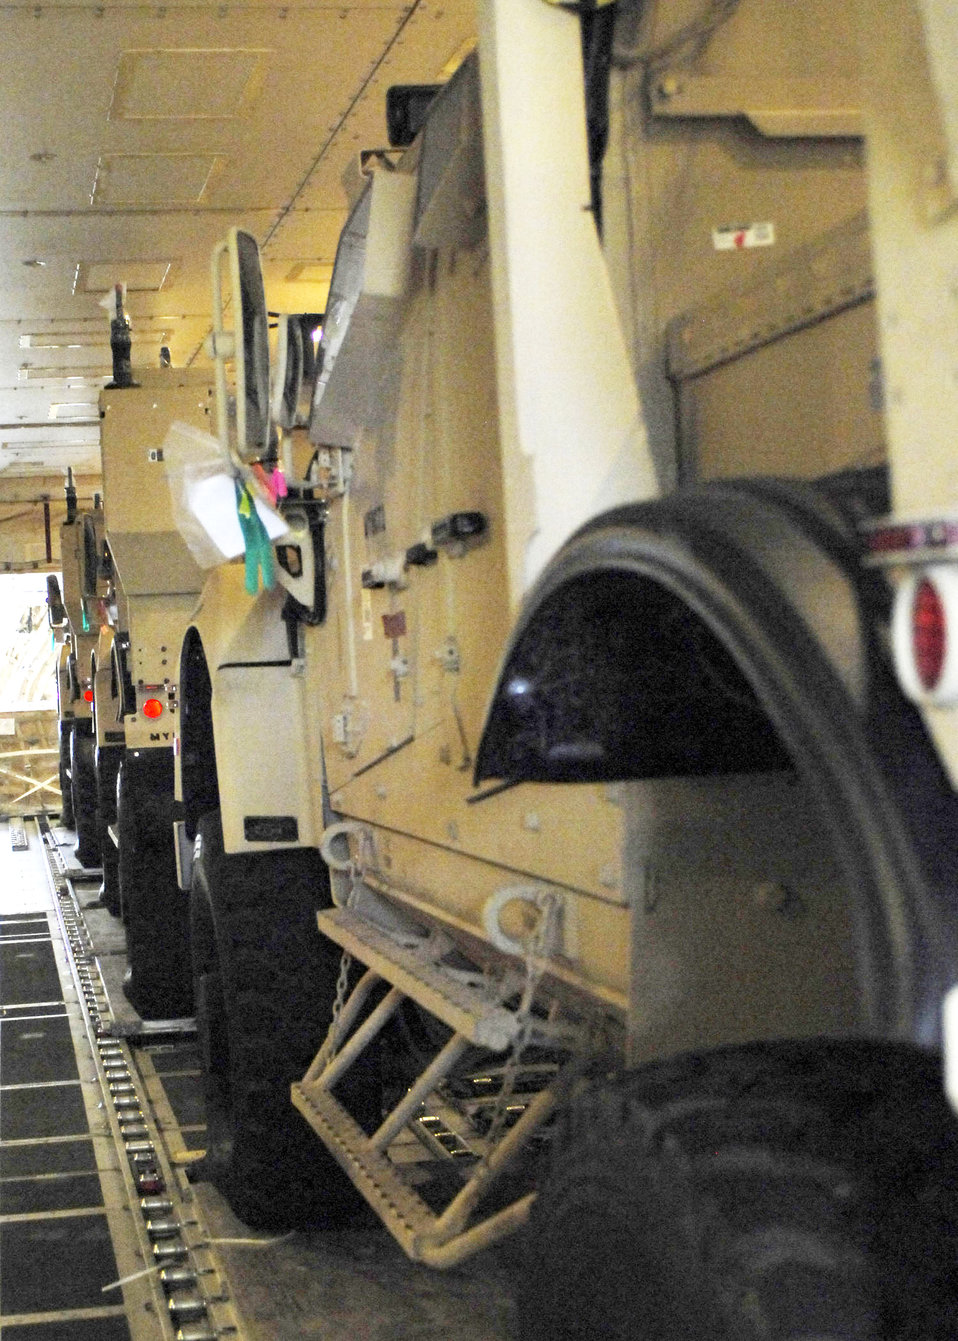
Bagrams new arrivals

Mine-resistant ambush-protected all-terrain vehicles wait to be unloaded from a Boeing 747 Nov. 9, 2009, at Bagram Airfield, Afghanistan. The M-ATVs support mounted patrols, reconnaissance, security, convoy protection, communications, command and control, and combat service support. The M-ATV is designed to replace the up-armored Humvee in Afghanistan.